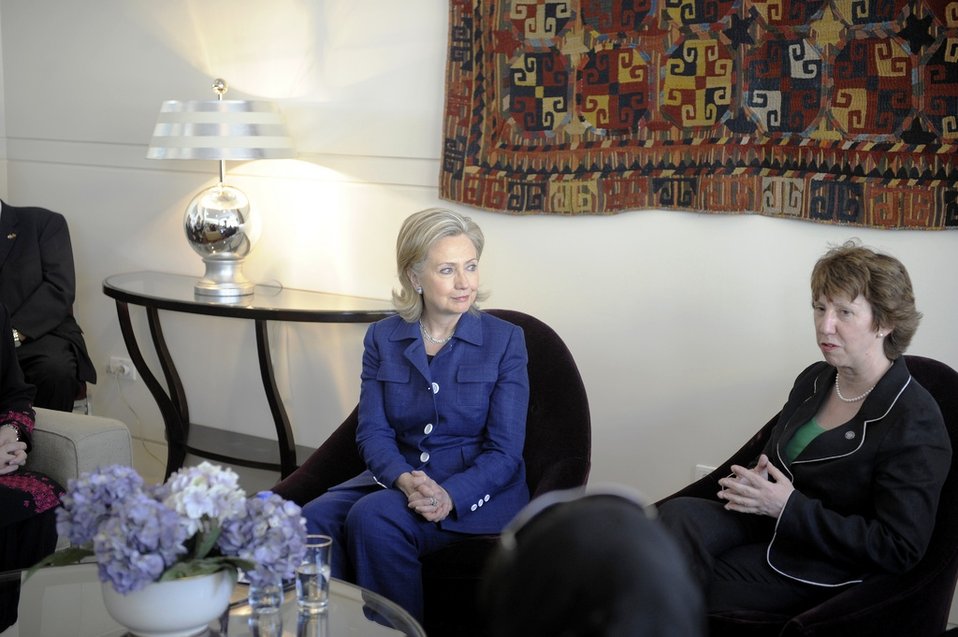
Secretary Clinton Listens to EU High Representative for Foreign Policy Ashton

U.S. Secretary of State Hillary Rodham Clinton (left) listens to Danish Foreign Minister Lene Espersen (right) at a women's empowerment event co-hosted by Danish Foreign Minister Lene Espersen and in Kabul, Afghanistan, on July 20, 2010.